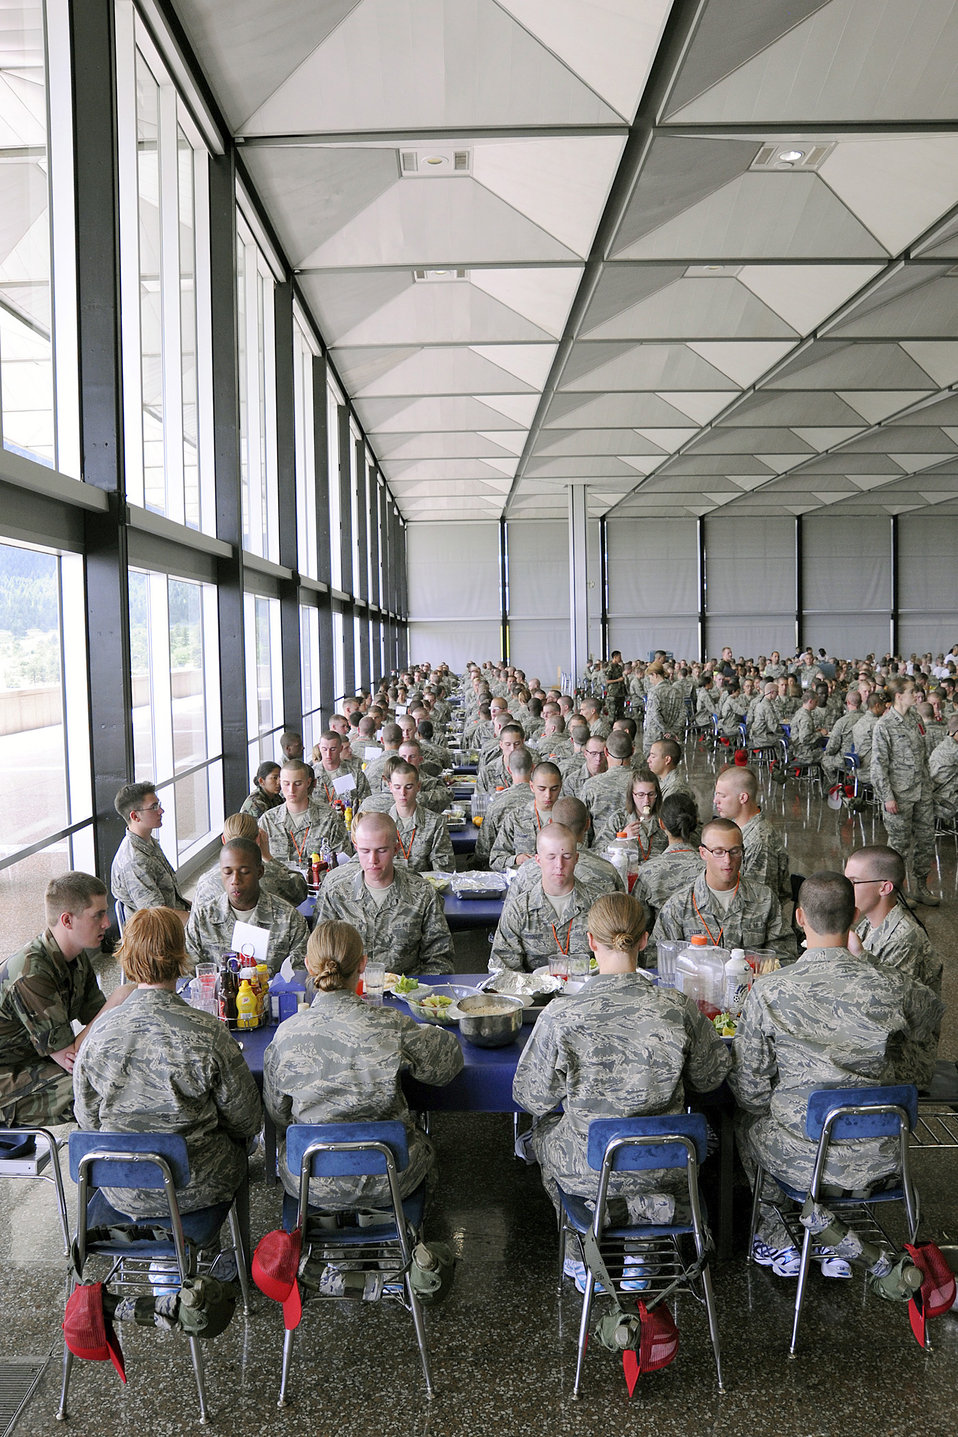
New Academy cadets learn dining 'traditions'

Basic cadets with the Class of 2014 learn meal procedures during the first day of basic cadet training at the U.S. Air Force Academy, Colo., June 25, 2010.